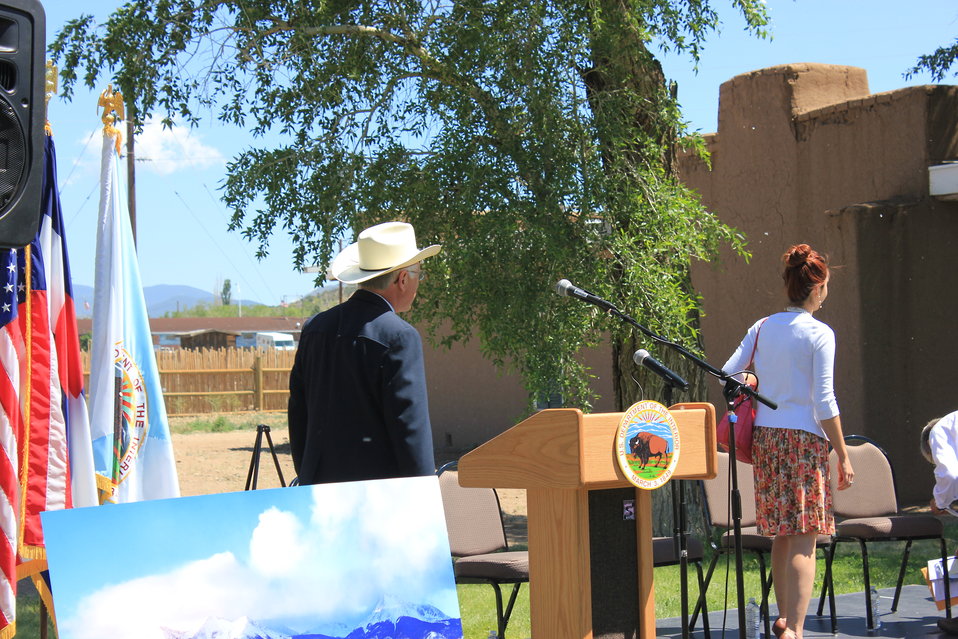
Historic Conservation Easement in Sangre de Cristo Mountains